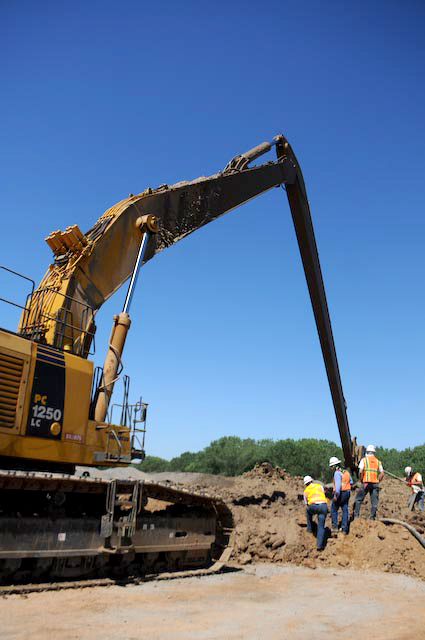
Corps digging deep to reduce West Sacramento flood risk

Construction team members measure the depth of the seepage cutoff wall trench to make sure it has reached its target depth June 19, 2012, in West Sacramento, Calif. The U.S. Army Corps of Engineers is installing a 75-foot-deep seepage cutoff wall along more than 2,200 feet of levee as part of the Sacramento River Bank Protection Project, a joint effort with the Central Valley Flood Protection Board to strengthen levees along the Sacramento River and its tributaries.